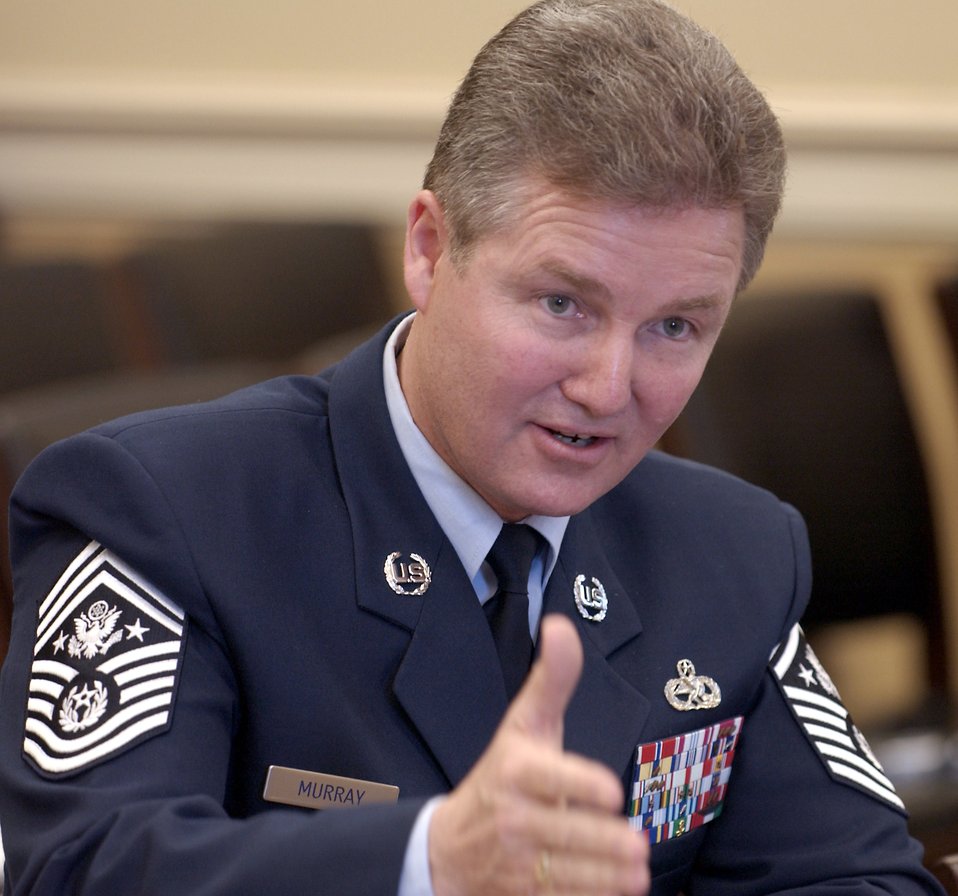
Murray testifies at new quality of life committee

WASHINGTON -- Chief Master Sgt. of the Air Force Gerald R. Murray answers questions during the first hearing of the newly formed House Appropriations Committee subcommittee on military quality of life and veterans' affairs here Feb. 16. The subcommittee heard testimony concerning quality of life issues in the military from each branch's senior ranking enlisted servicemember.